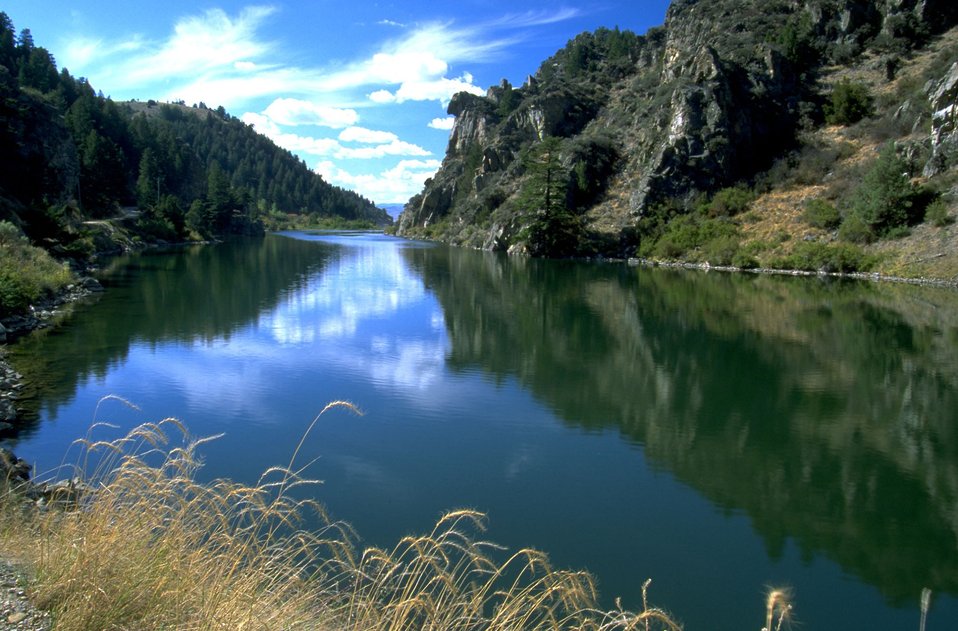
Reflections of sky and hills on the Madison River